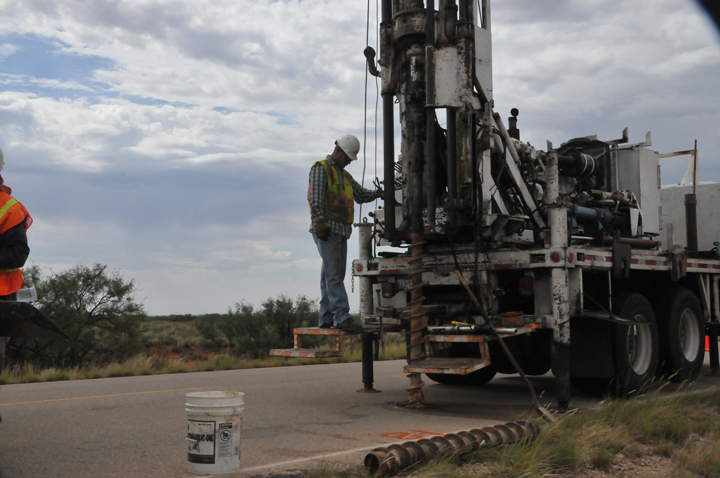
South Access Road Reconstruction

The reconstruction of a 3.8-mile portion of the South Access Road was one of the Waste Isolation Pilot Plant’s 2010 Recovery Act accomplishments.